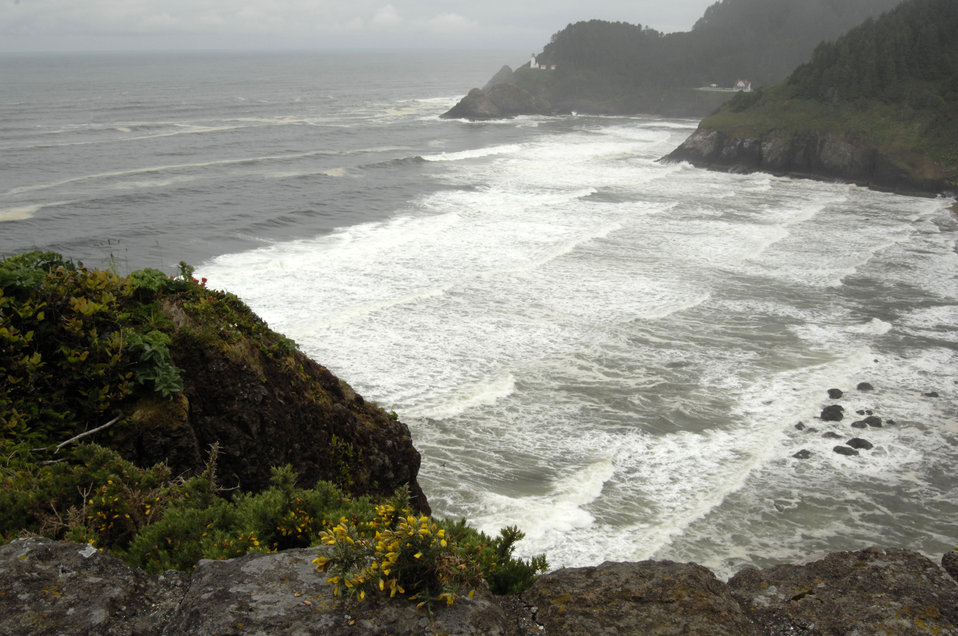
The Oregon’s coast runs generally north to south along the Pacific Ocean, forming the western border of the state. The coast is approximately 363 miles long and has three district sub-regions each with its own local features and regional history. This is a view of the Central Coast, which stretches from Lincoln City to Florence on June 11, 2008.